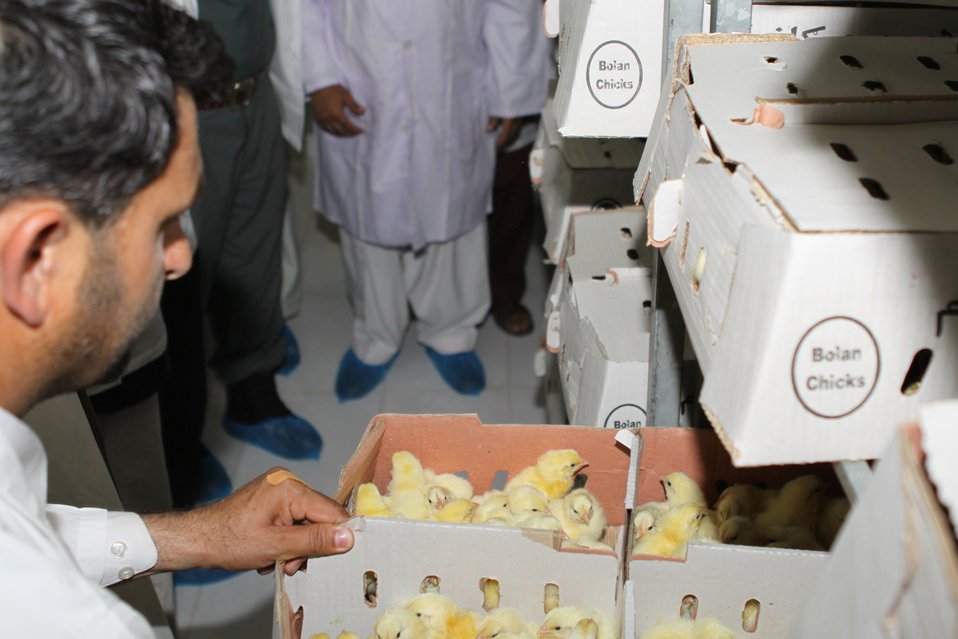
Bolan Poultry Farm